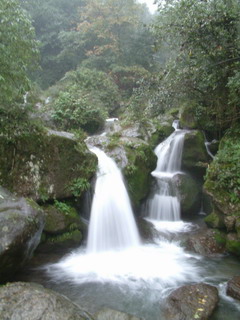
Qingchengshan1